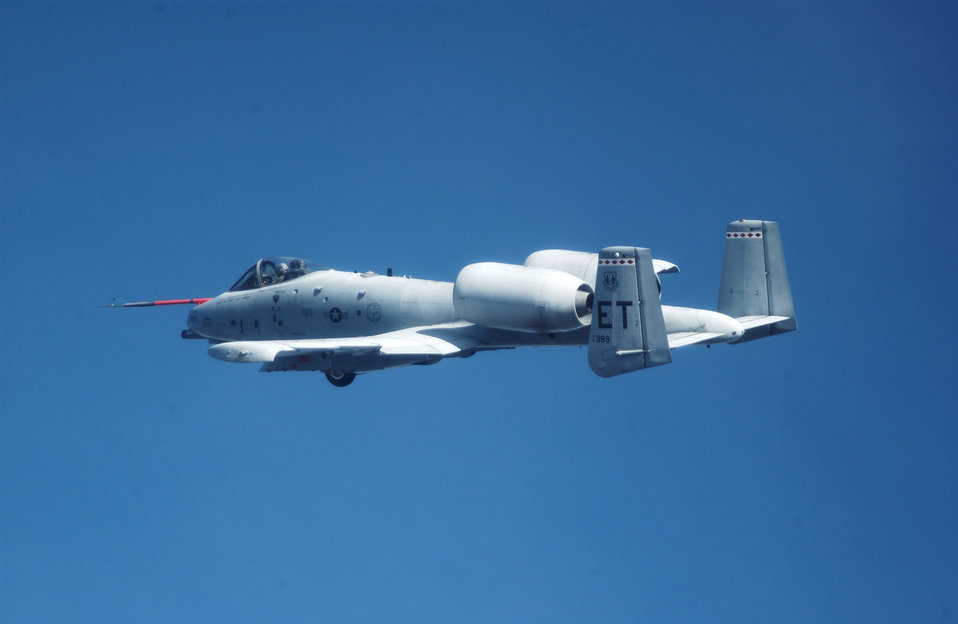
C-model A-10 takes first flight

EGLIN AIR FORCE BASE, Fla. -- The newly designed C-model A-10 Thunderbolt II was flown for the first time here Jan. 20. The aircraft, modified with precision engagement technology, can now accept more high-value target missions.